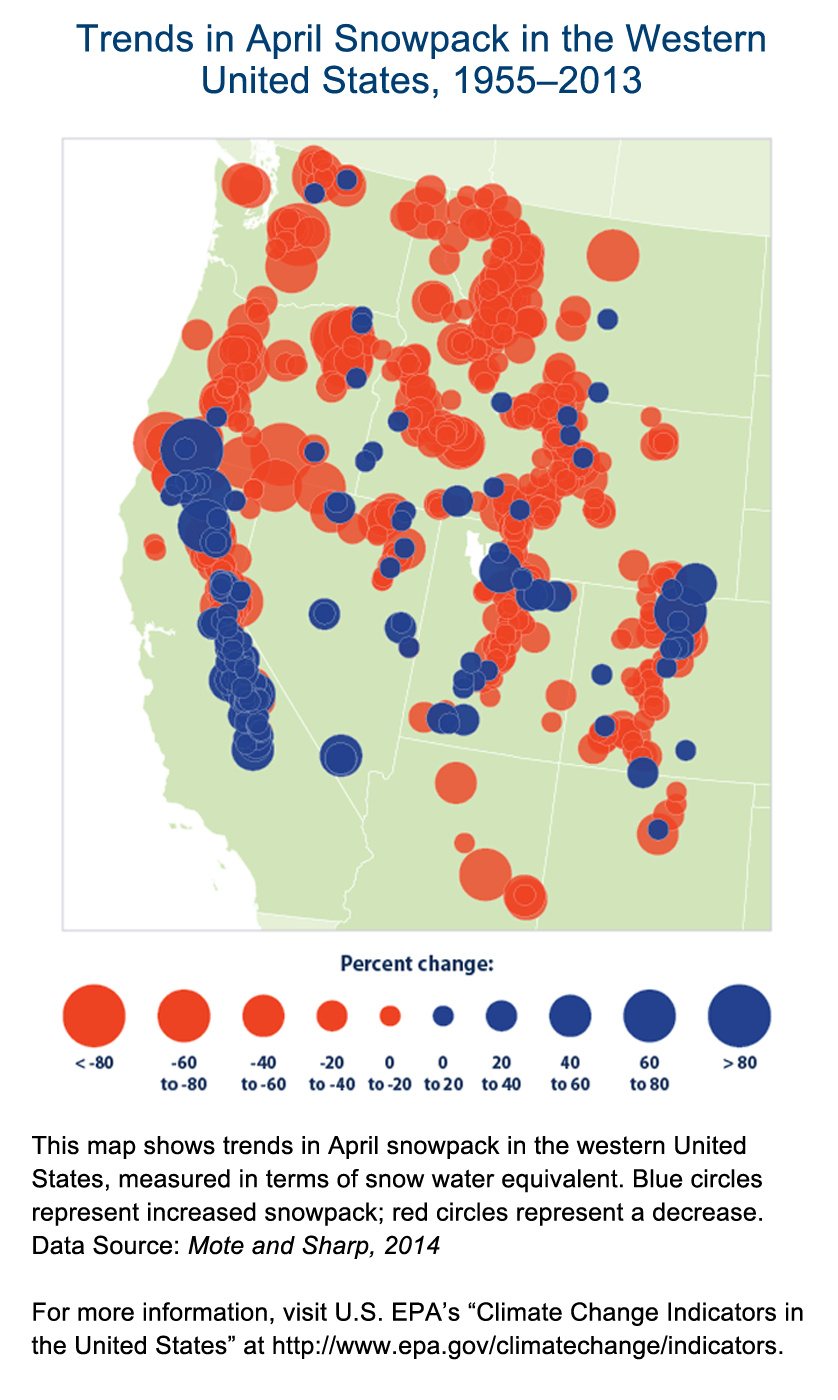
Trends in Snow Pack

Mountain snowpack is a key source of drinking water for millions of people in western North America. But, snowpack measurements are changing, with the largest and most consistent decreases observed in Washington, Oregon, and the northern Rockies.